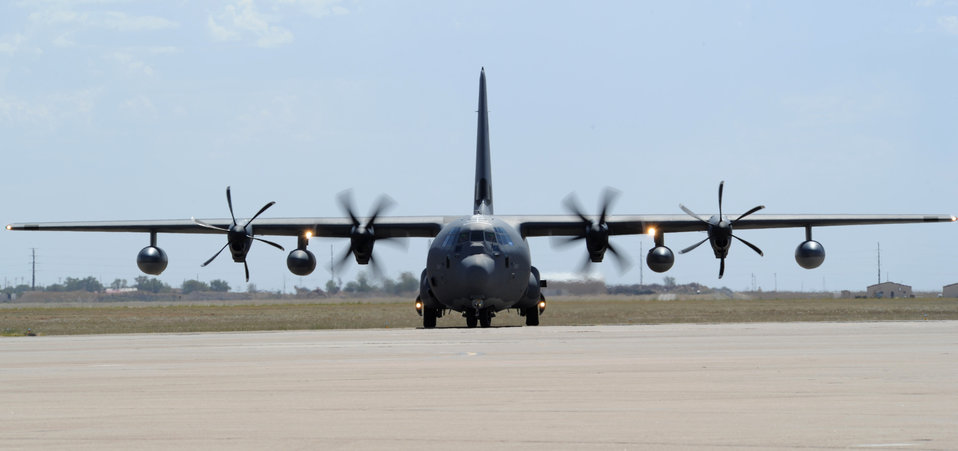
Commando II

A new MC-130J Commando II taxis on the flightline at Cannon Air Force Base, N.M., Sept. 29, 2011. The aircraft was delivered to Cannon by Lt. Gen. Eric Fiel, Air Force Special Operations Command commander, and Brig. Gen. Stephen Clark, AFSOC director of plans, programs, requirements and assignments.